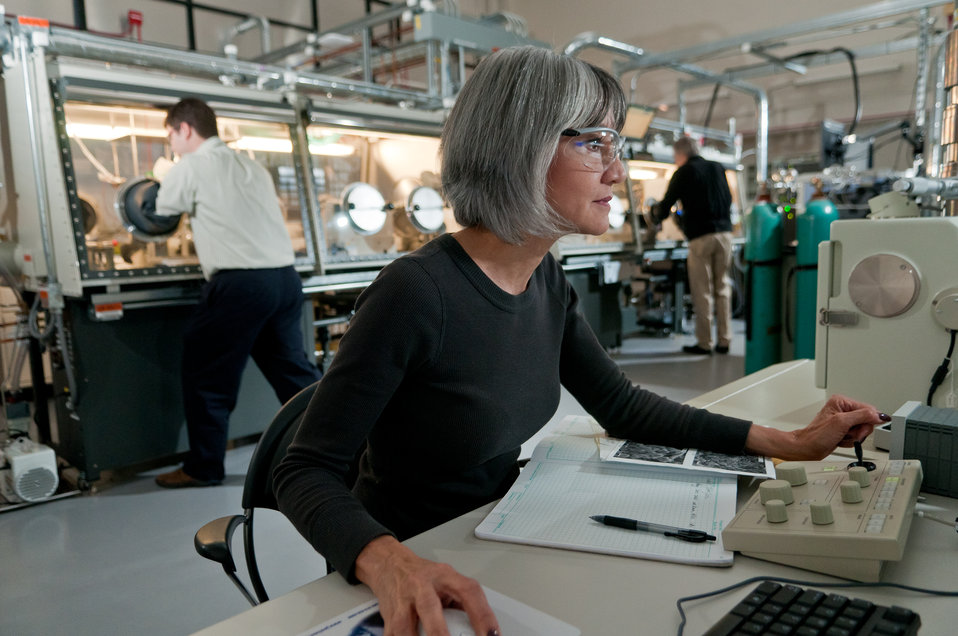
Scientist analyzes results at Argonne National Laboratory's Battery Post-Test Facility.

The facility allows the laboratory's renowned researchers to dissect, harvest and analyze battery materials from used and previously tested battery cells in order to identify for developers and manufacturers the exact mechanisms that limit the life of their battery cells. This is preformed in one glove box. It keeps the air-sensitive battery materials pristine and intact, yielding more information about what's really going on in the later stages of characterization and analysis.